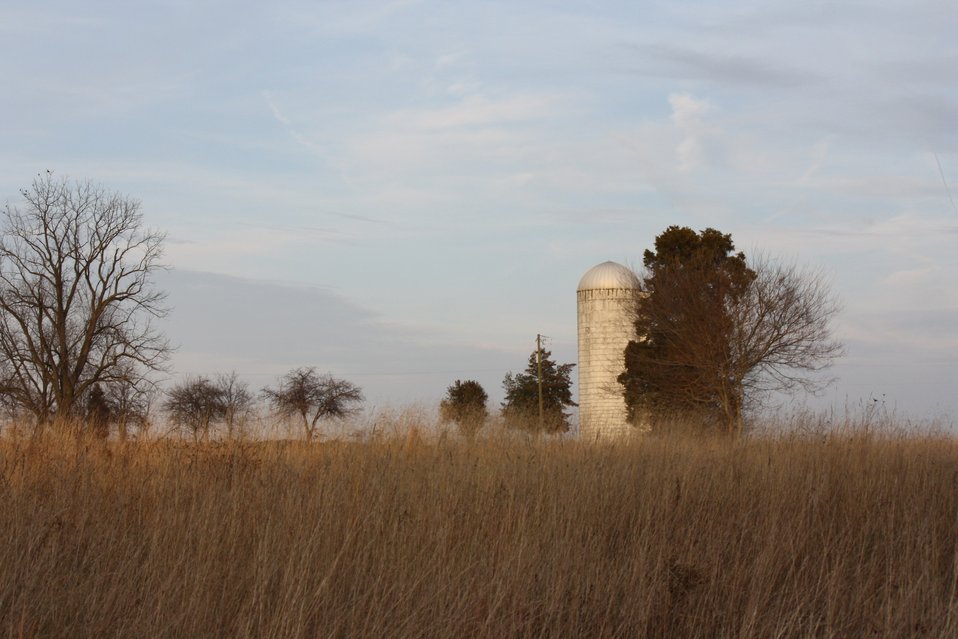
Bristoe Battlefield

The Battle of Kettle Run took place on this field in 1862, the battle began the 2nd Battle of Manassas, from which the Union retreated to Washington, D.C. and the Capitol became a hospital for causalities.